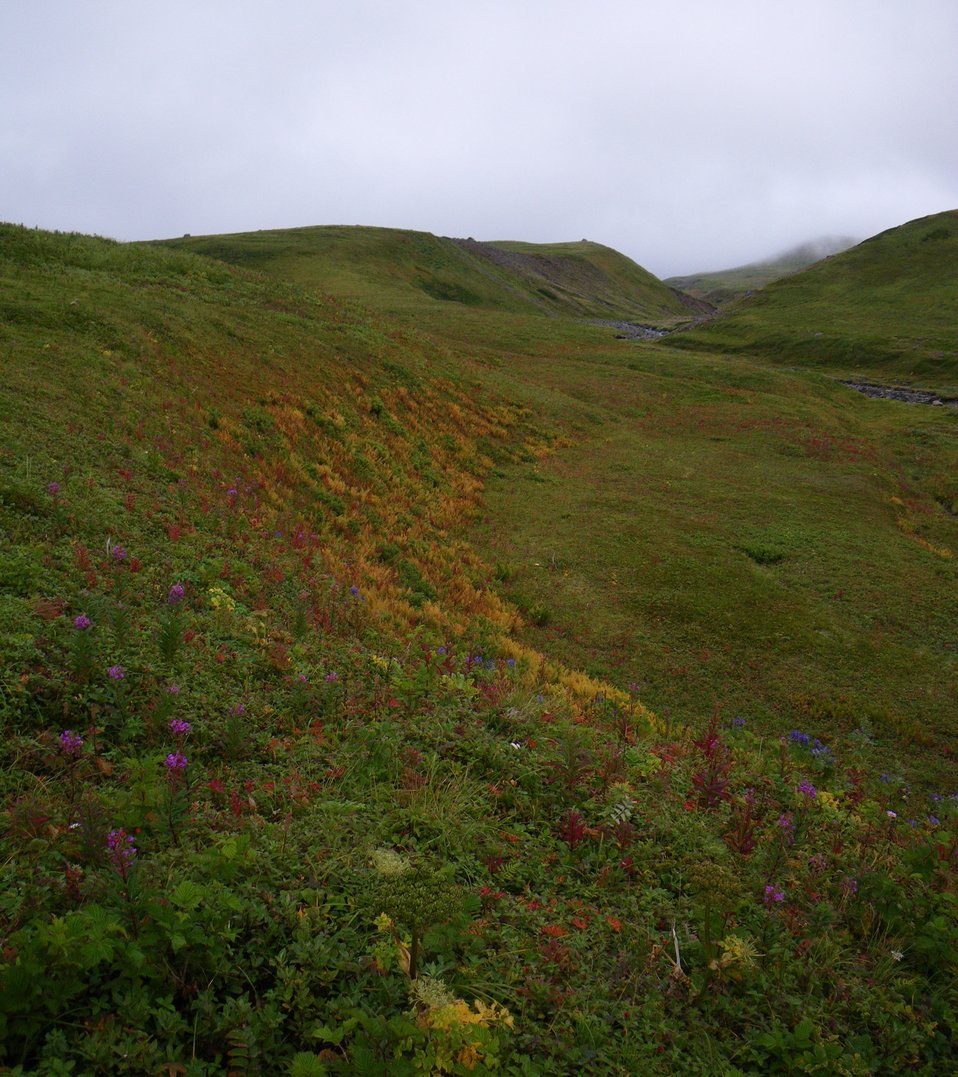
Fall Colors

Wilderness near Frosty Peak, Izembek National Wildlife Refuge
Photo by Kristine Sowl,
USFWS, Public Domain